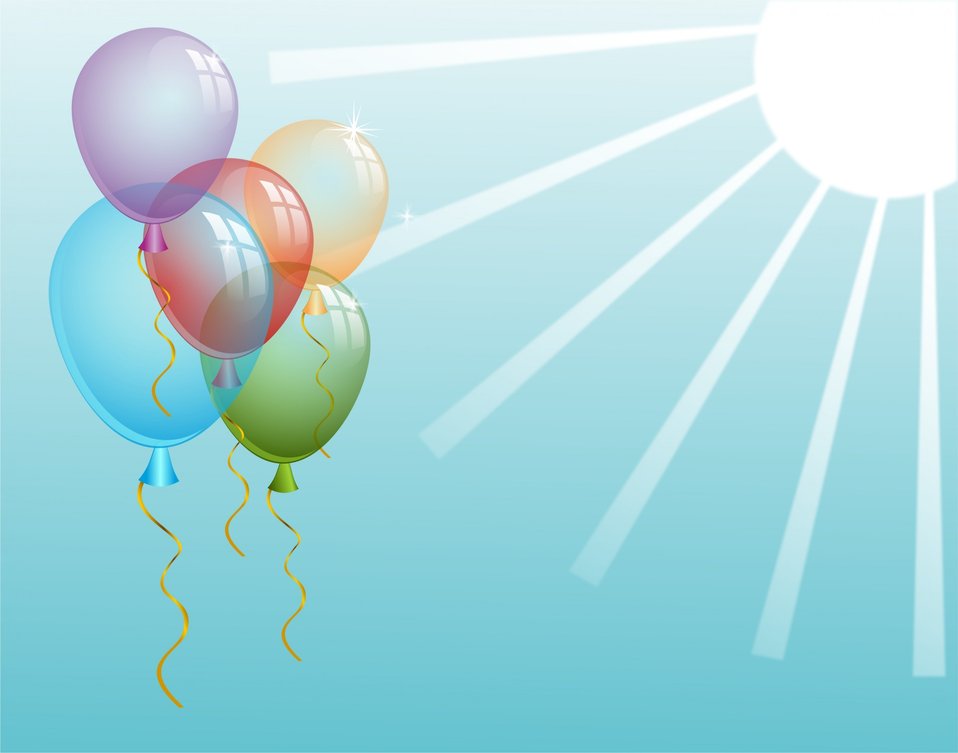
Balloons on a blue background.